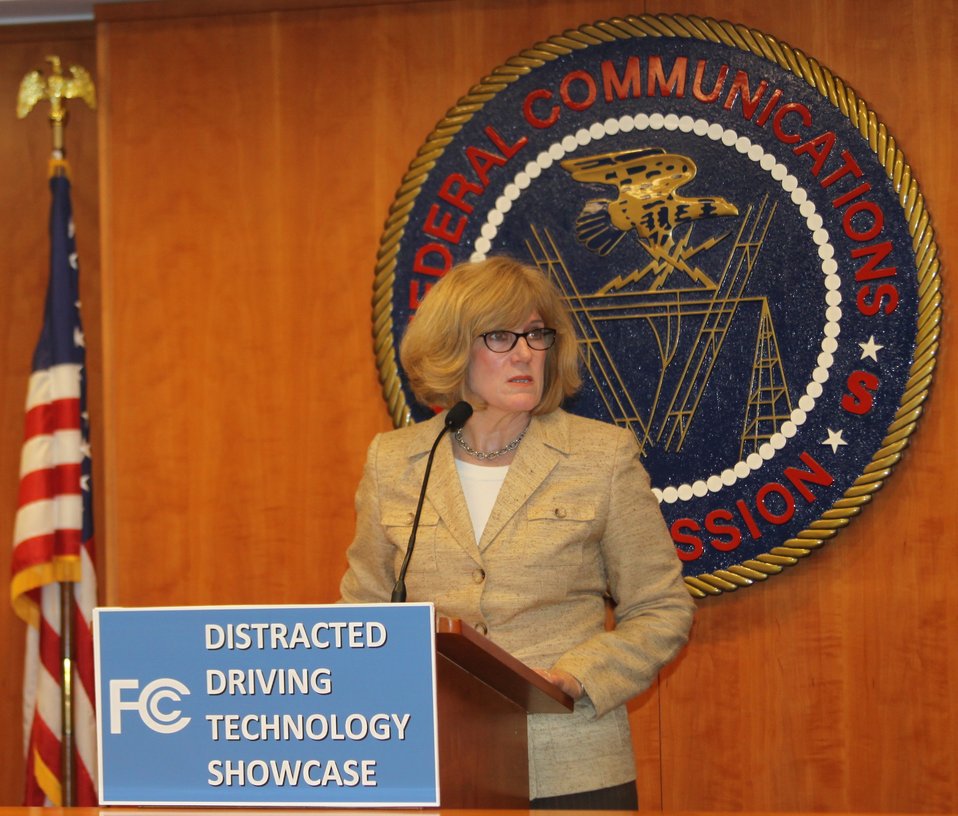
Remarks from Kris Monteith, Acting Chief, Consumer and Governmental Affairs Bureau: Distracted Driving Technology Showcase April 19, 2013